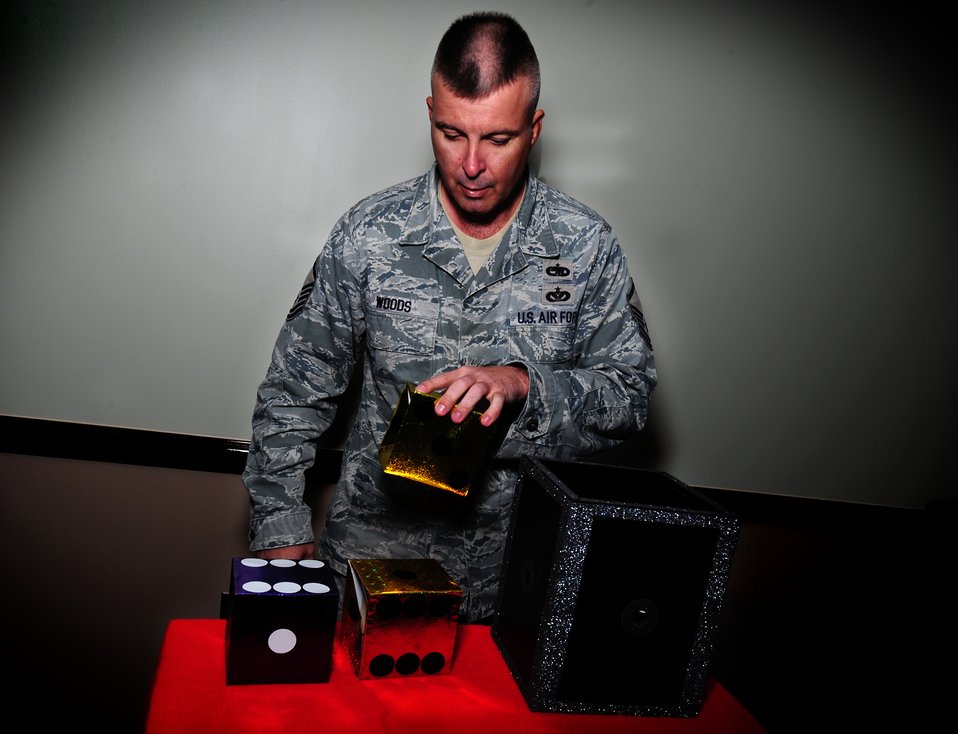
Master Sgt. Perry Woods demonstrates one of his magic tricks at Joint Base Charleston - Air Base Nov. 30. Woods has been in the Air Force for 22-years and has been performing magic since he was nine-years old. He has volunteered to perform his magic shows for local organizations and charities for the past three years. Woods is a program manager with the 437th Maintenance Squadron.